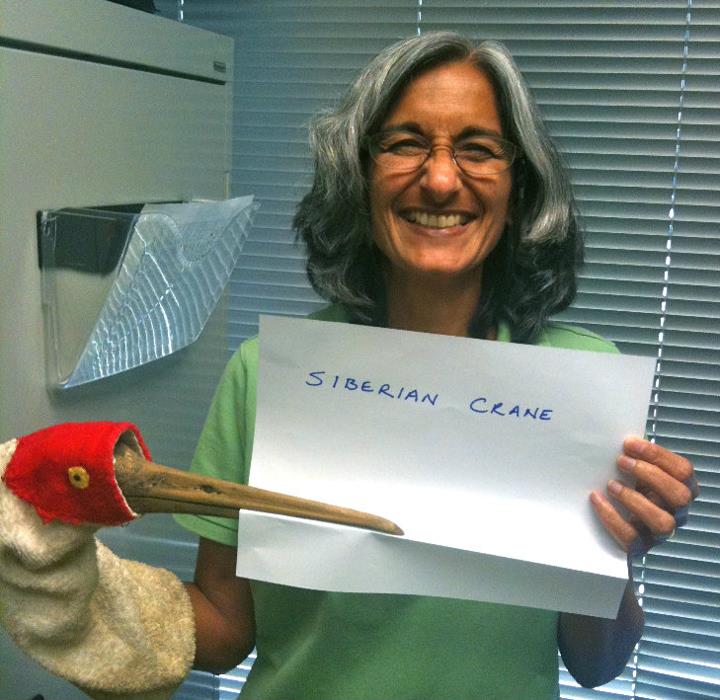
Mini Nagendran, 'Siberian Crane,'

International Affairs participates in FFI's In Our Hands campaign